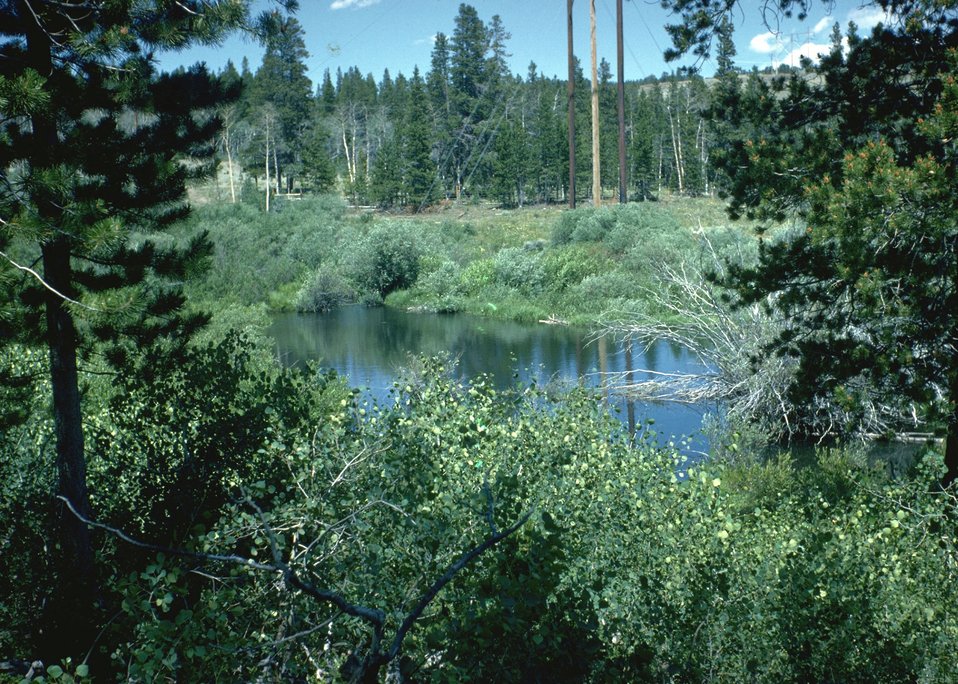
Scenic view.